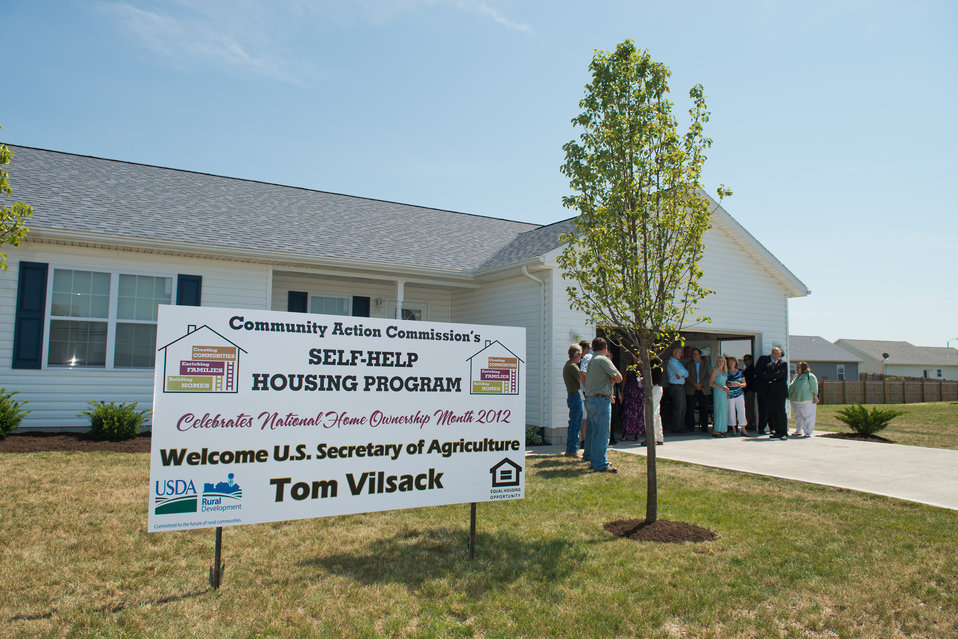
Agriculture Secretary Tom Vilsack visits residents of Ohio’s Arbor Village in Fayette County, OH on Thursday, June 28, 2012. This is a progressive housing development funded largely in partnership with the U.S. Department of Agriculture’s (USDA) Rural Development (RD) housing programs during a commemoration of National Homeownership Month. The project is in its 20th consecutive year of participating in the 523 Self-Help Housing Program, Community Action Commission in Fayette County, OH. Fayette County helps Arbor Village residents work in teams with supervisory contractors in return for a “sweat equity” contribution that may equal as much as $20,000.